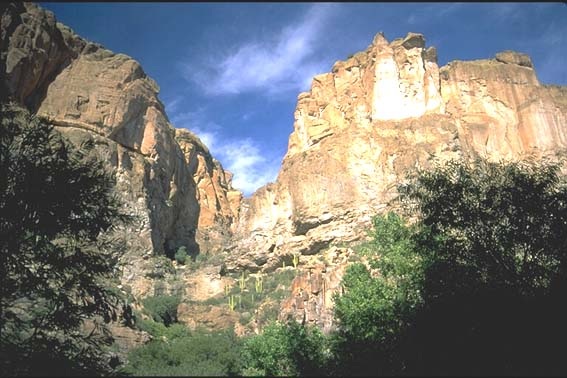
Aravaipa Canyon Wilderness